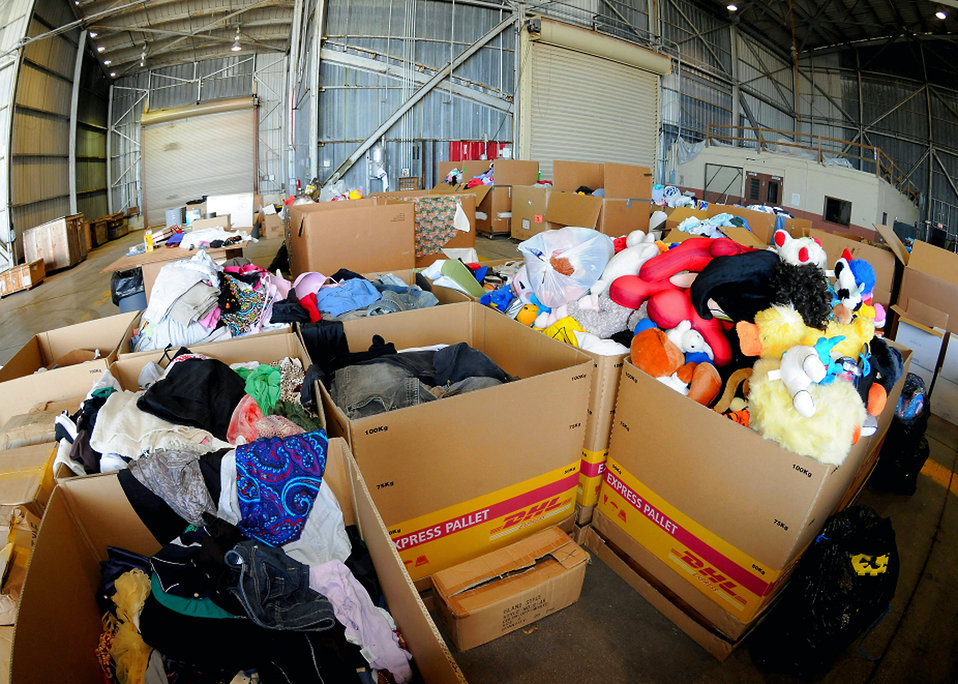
Operation Christmas Drop Holds Final Box Build

More than 186 boxes are filled with toys, first aid kits, food and supplies Dec. 7 at Andersen Air Force Base, Guam, during the Operation Christmas Drop final box build. Christmas Drop is the longest running humanitarian campaign in the world and this year marks it 56th year in operation.